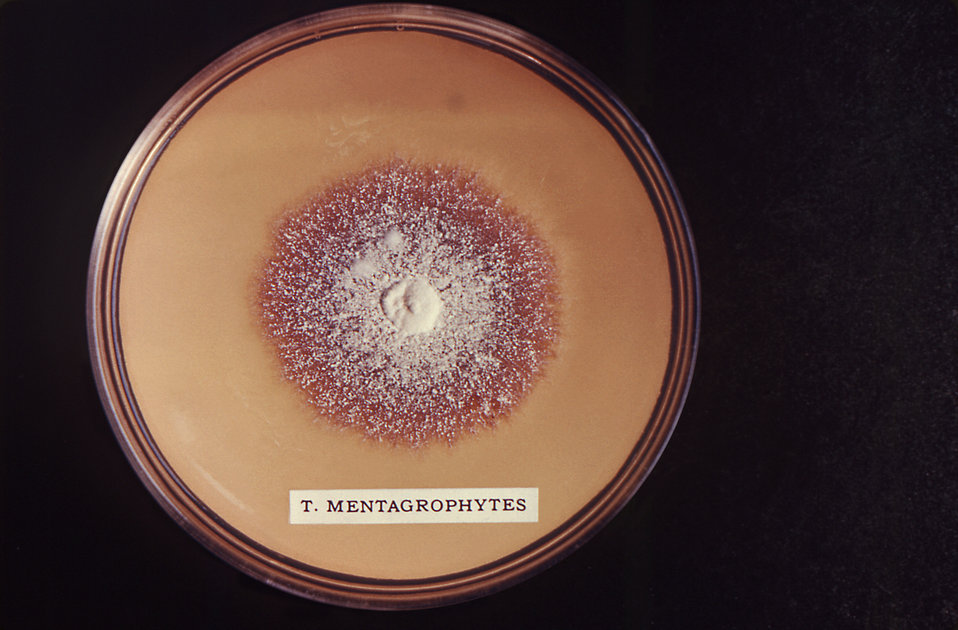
This is a front view of a Petri dish culture plate that had cultivated a large Trichophyton mentagrophytes var. granulare fungal colony. The colony displayed a morphology consisting of a red-orange coloration, and a fuzzy, cottony central region. T. mentagrophytes colonial coloration ranges from white to bright yellowish-beige, to red-violet.